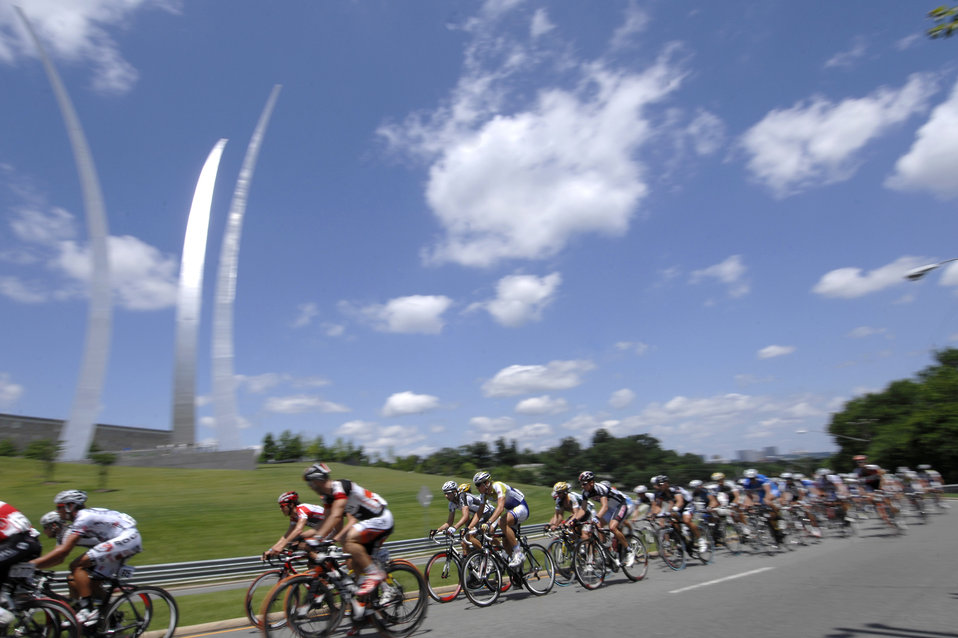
Bikers raise money for wounded warriors during Cycling Classic

Riders pass the Air Force Memorial during the 2009 Air Force Cycling Classic May 31 in Arlington, Va. Nearly 1,000 professional and amateur riders participated in the annual, two-day bicycling event, raising $34,500 for the Intrepid Fallen Heroes Fund charity.